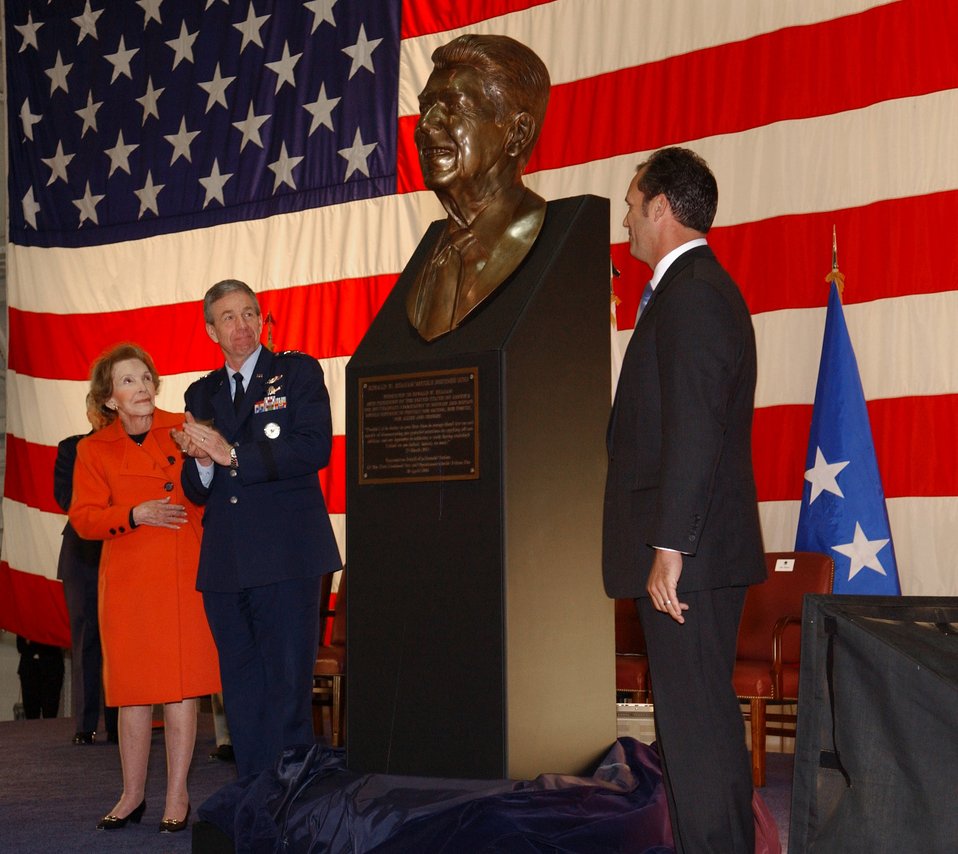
Dedication ceremony honors President Reagan

Former First Lady Nancy Reagan, Lt. Gen Henry A.